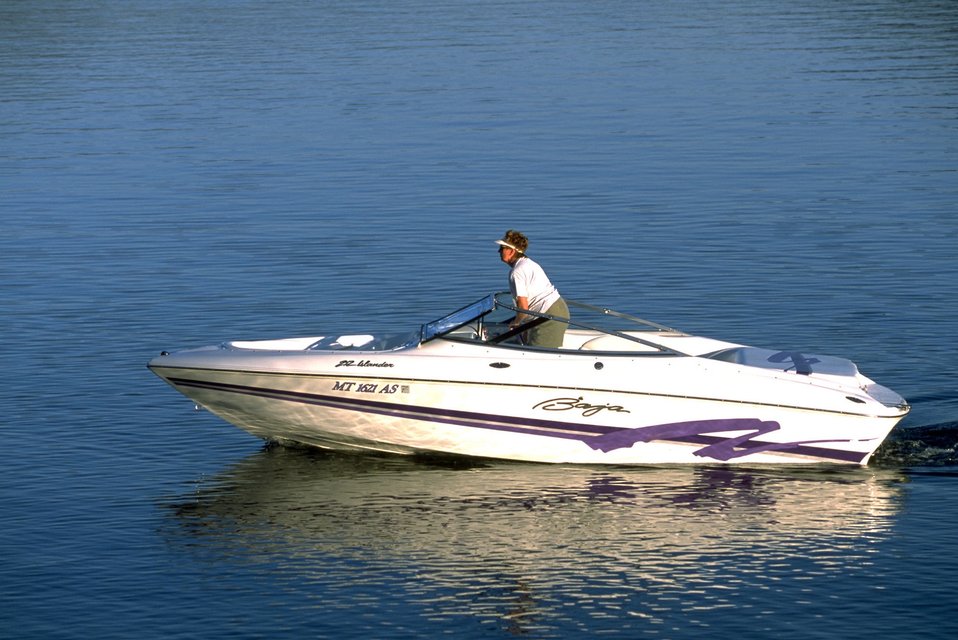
Speed boat in Holter Lake